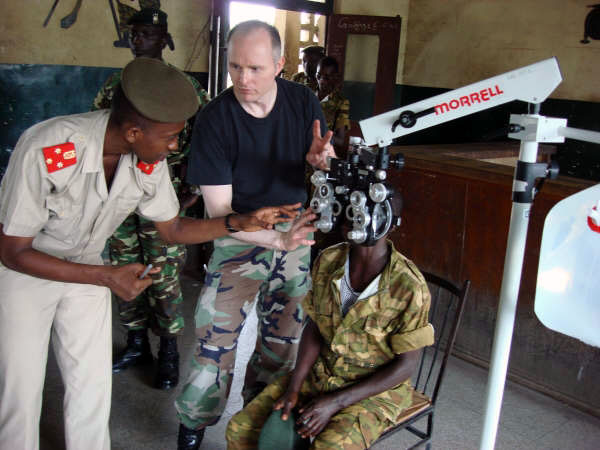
Airmen provide optometry care to deploying African troops

Maj. (Dr.) Craig McCluer and African military doctor, Dr. Pamphile Nkurunziza examine a patient at Gakumbu military base, Africa. Major McCluer is part of a team sent to provide eye care Nov. 6 to 15 to two Burundi, Africa, battalions preparing to deploy on a peacekeeping mission to Somalia. Major McCluer is an optometry specialist from the 52nd Aerospace Medicine Squadron at Spangdahlem Air Base, Germany, and Dr. Nkurunziza is the Burundi Division surgeon.